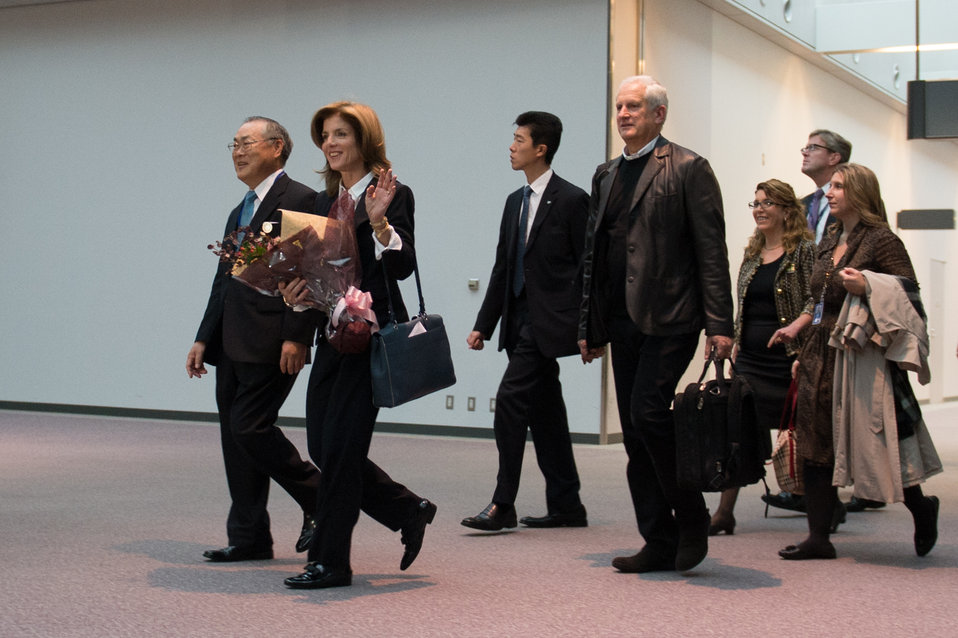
Ambassador Kennedy Arrives in Japan

U.S. Ambassador to Japan Caroline Kennedy arrives in Narita, Japan, on November 15, 2013.